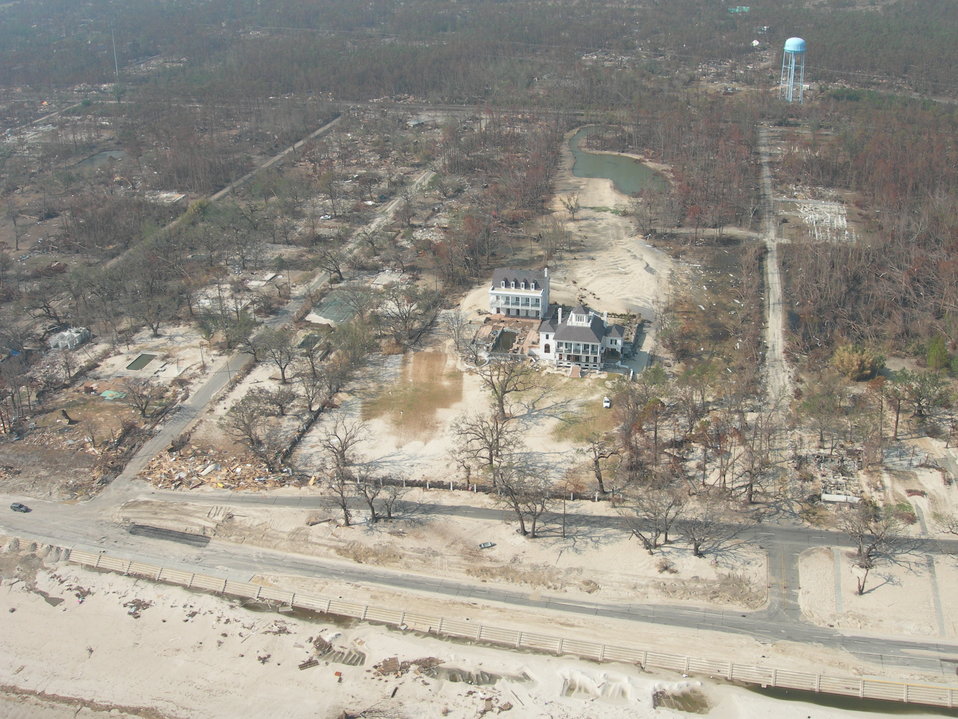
Buildings in New Orleans, LA, were demolished by hurricane Katrina’s 20-foot storm surge that overwhelmed the city’s levees. Hurricane Katrina was the 6th strongest hurricane in U.S. history and the 5th deadliest. Katrina made landfall on Monday morning, August 29, 2005 as a Category 3 hurricane with sustained winds of 125 mph with over a 20-foot storm surge. Katrina caused catastrophic damage over 90 thousand square miles across Louisiana with an estimated $75 billion dollars in damage. The total economic impact to the Gulf Coast was estimated at over $150 billion. 80% of New Orleans, LA, was underwater with some areas more than 20 feet deep. Less than a month later southern Louisiana was struck by a second Category 3 hurricane Rita inflicting more damage in the southwestern areas of Louisiana adding an addition $12 billion worth of damage to the already beleaguered state. The U.S. Army Corps of Engineers (USACE) under the auspices of the Federal Emergency Management Agency (FEMA) was the lead service in providing assistance to the citizens of Louisiana. The U.S. Department of Agriculture (USDA) supplied emergency food aid, emergency loan assistance to farmers and home owners, and USDA personnel from around the nation volunteered their time and muscle to aid in the recovery operations. USDA Photo Terri Teuber.